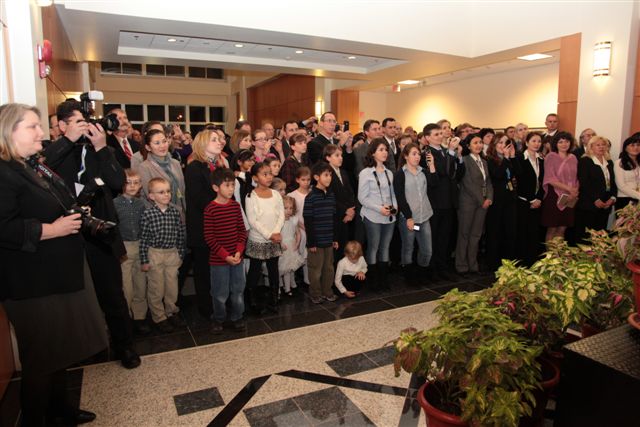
Members of the U.S. Embassy Astana Listen to Secretary Clinton

U.S. Embassy Astana staff and their families listen to U.S. Secretary of State Hillary Rodham Clinton in Astana, Kazakhstan, on December 1, 2010.